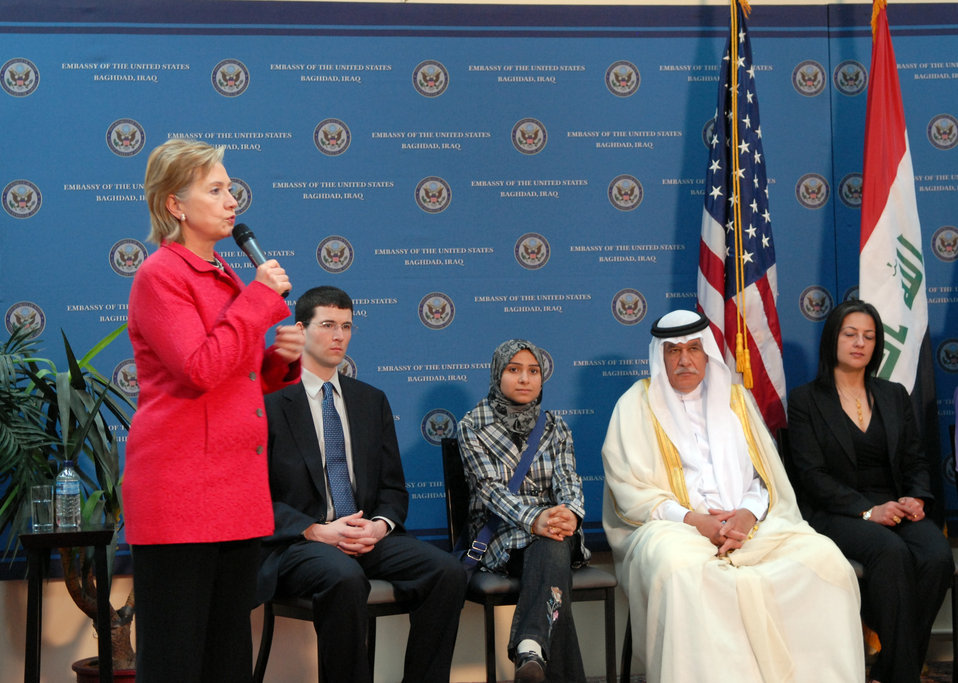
Secretary Clinton Town Hall Meeting in Baghdad

U.S. Secretary of State Hillary Rodham Clinton conducts a town hall meeting with Iraqis and Provincial Reconstruction Team (PRT) staff, taking questions from the audience in Baghdad, Iraq April 25, 2009.